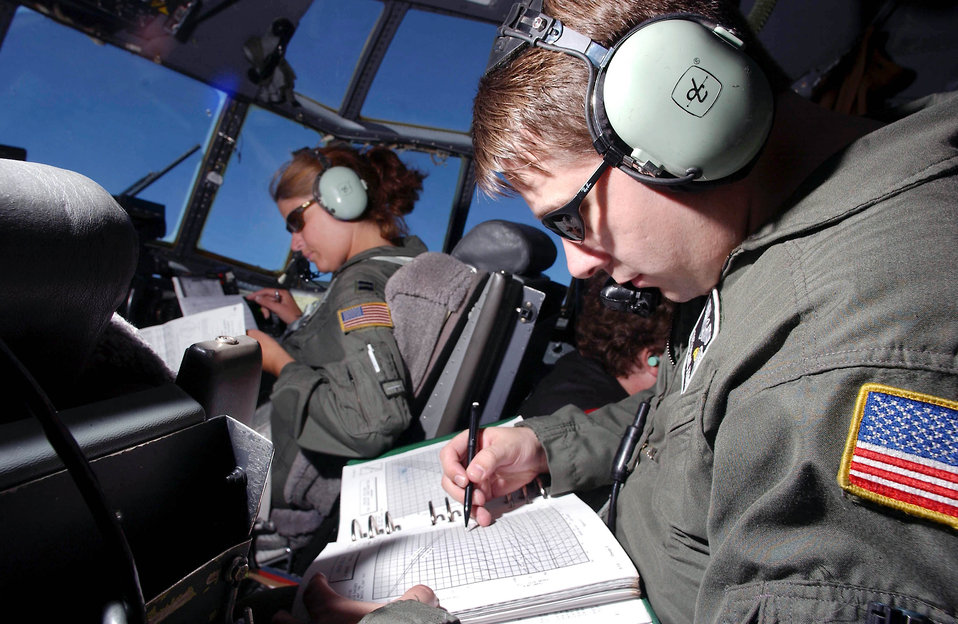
Hercs deliver relief

OVER ALGERIA -- Tech. Sgt. Michael Kimmel, a loadmaster, checks his load plans while Capt. Michelle Mollise co-pilots a C-130 Hercules carrying 15,000 pounds of humanitarian supplies bound for earthquake victims in Algeria. The reservists are deployed from the 773rd Airlift Squadron at Youngston, Ohio, to Ramstein Air Base, Germany.